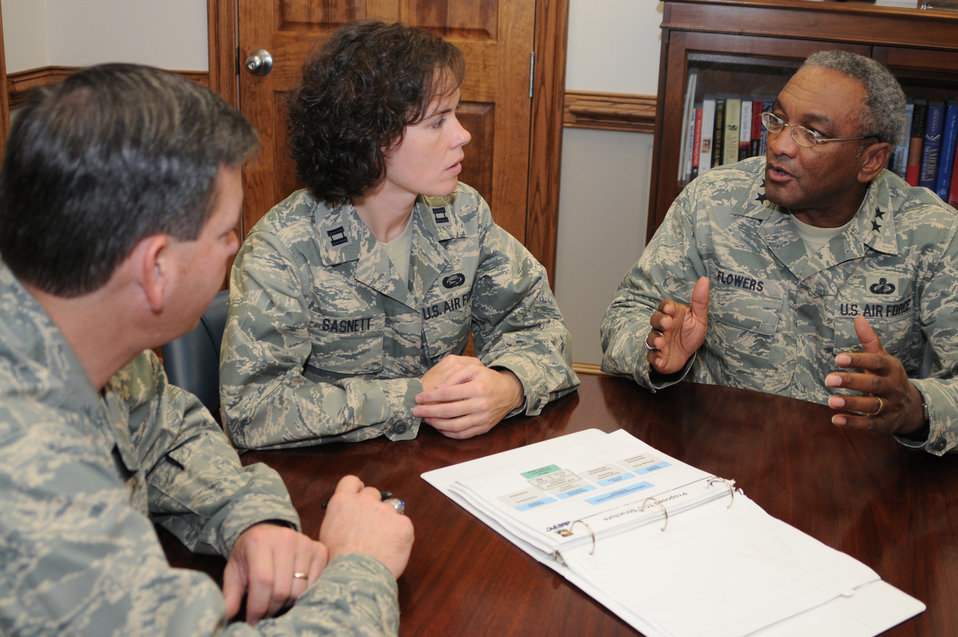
2nd Air Force transformation driven by warfighter's needs

Col. Andrew Cain (left) Capt. Jeannie Sasnett and Maj. Gen. Alfred K. Flowers discuss initiatives intended to improve and consolidate training management functions. Colonel Cain is the chief of 2nd Air Force's technical training operations center operations division, Captain Sasnett is the 2nd Air Force Det. 1 commander. General Flowers is the 2nd Air Force commander.